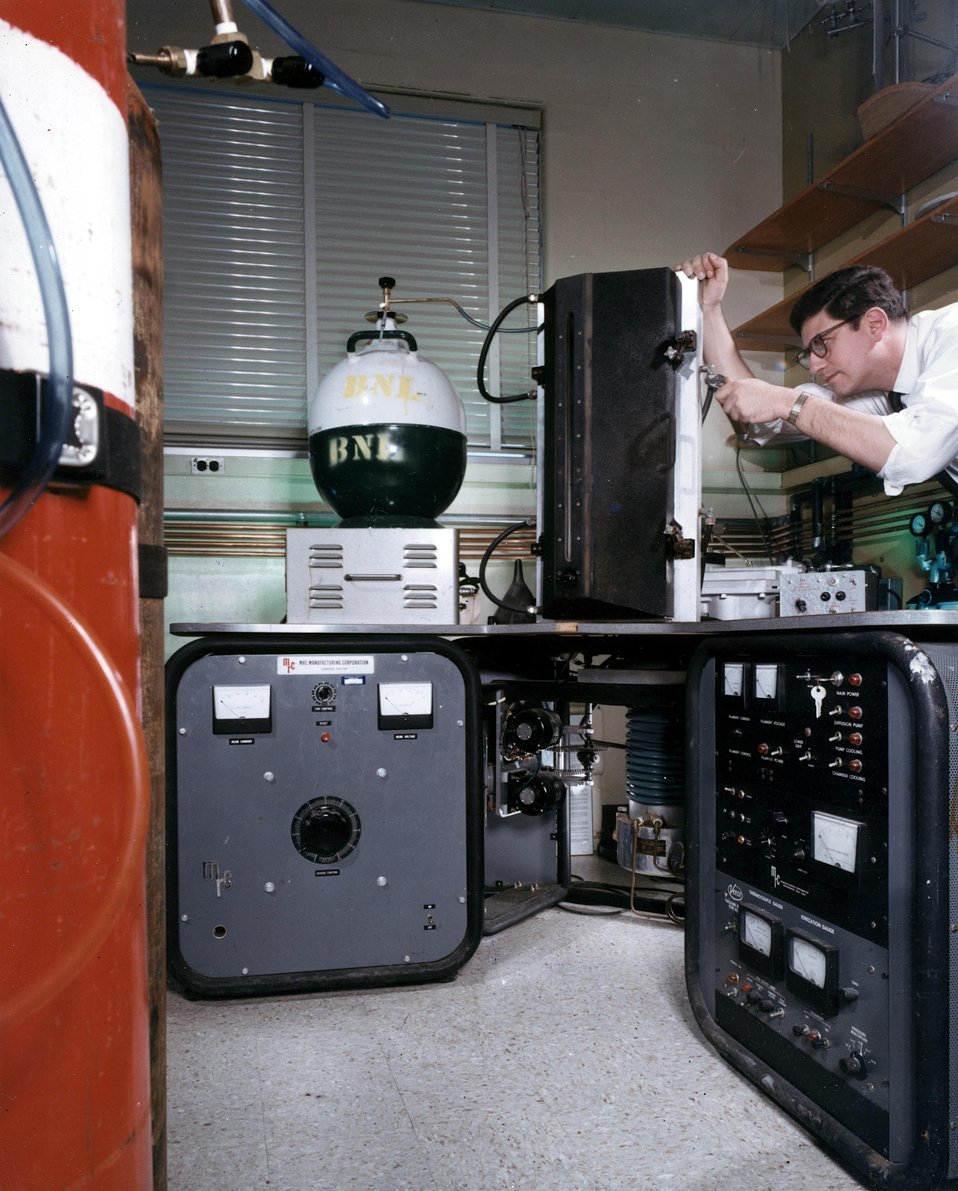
The electron beam zone refiner is used to produce high purity metals, as well as single crystals of many materials. c. 1967